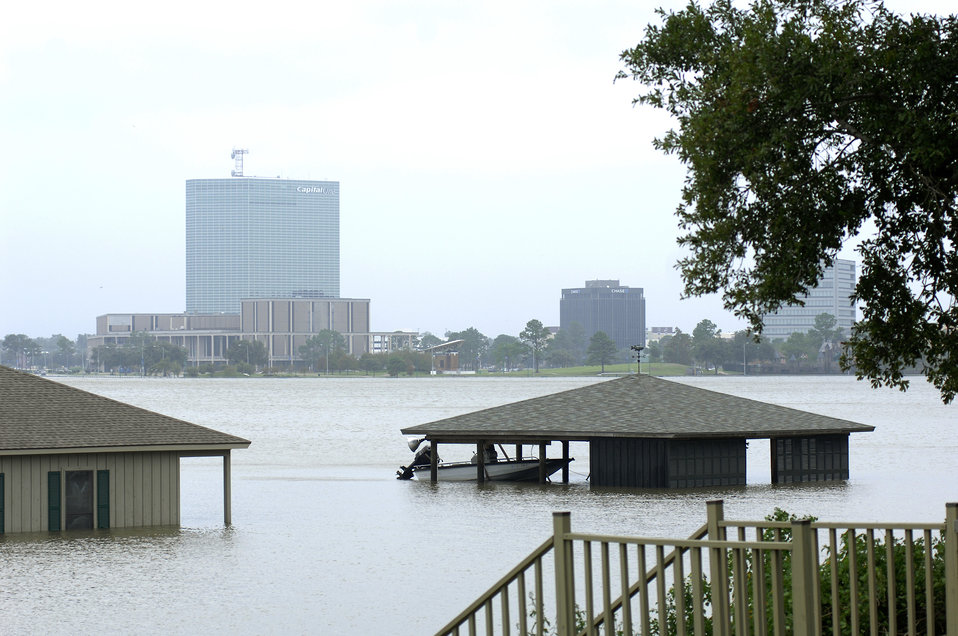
Hurricane Ike

A downtown view of the City of Lake Charles, La., Sept. 13 from the lakes edge after the water levels rose nearly five feet due to Hurricane Ike flooding a vast amount of the city.